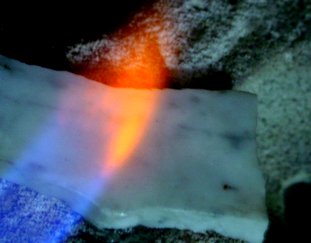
Calcium carbonate wetted with hydrochloric acid (thus forming CaCl2) held at a flame and showing red-orange flame color.